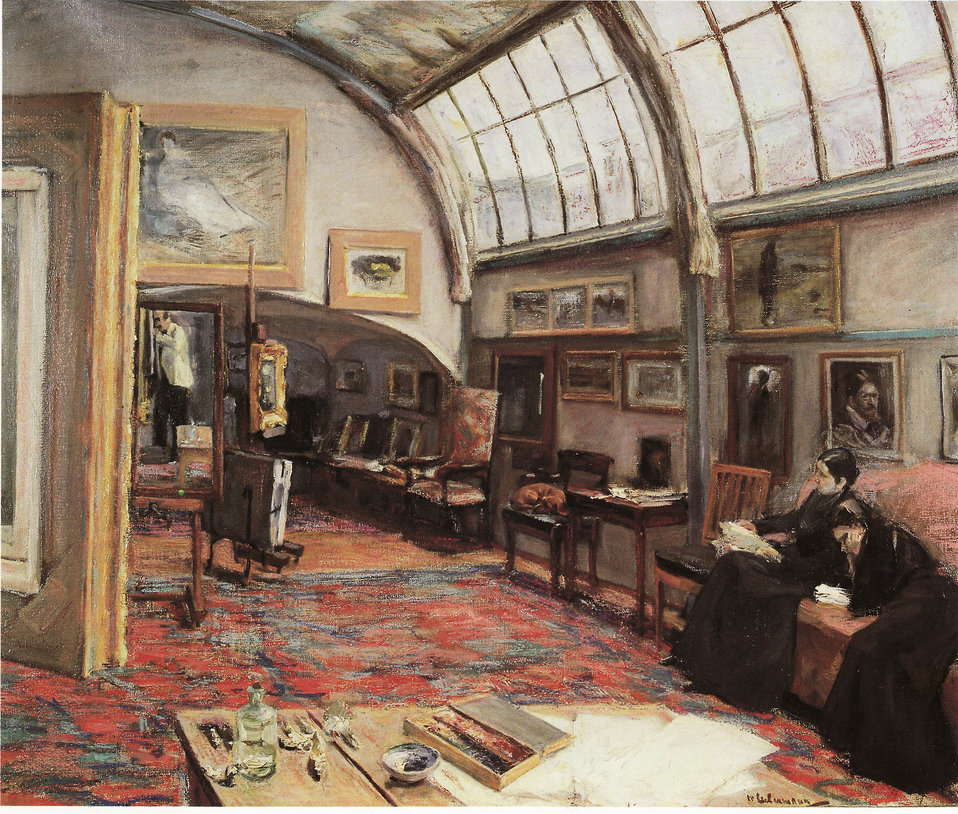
Das Atelier des Künstlers